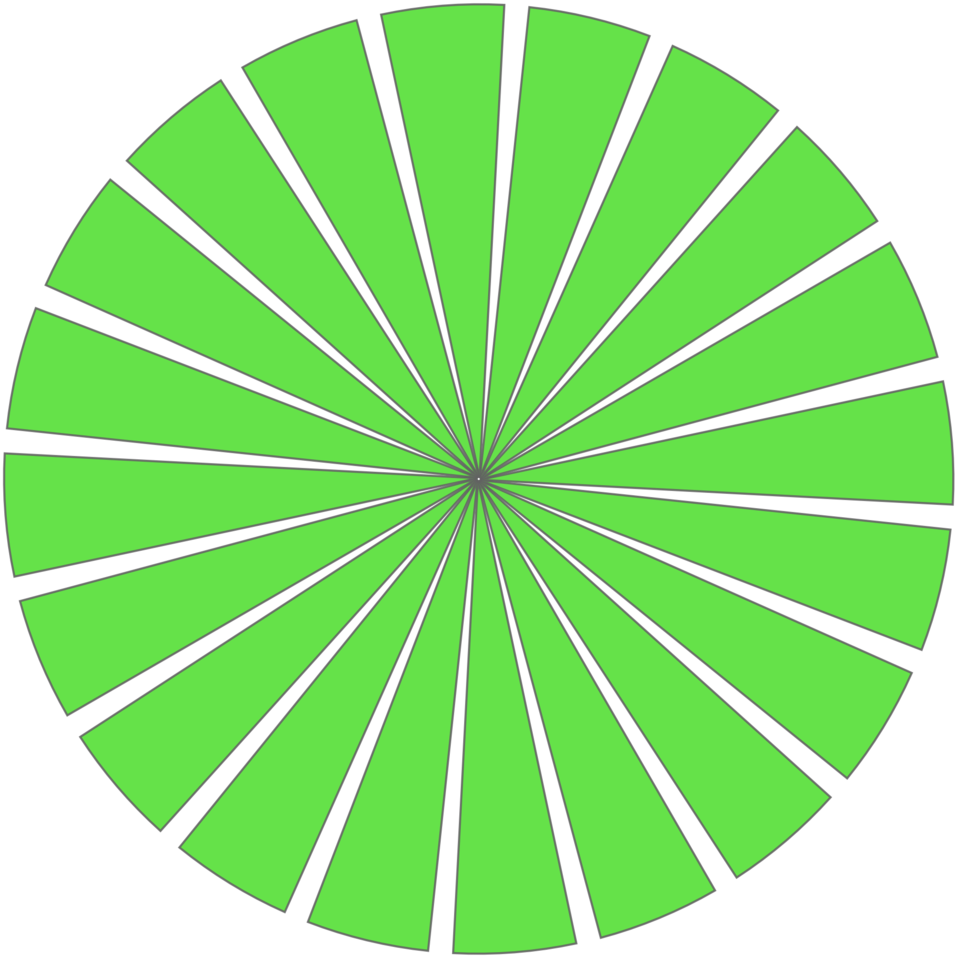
100proc